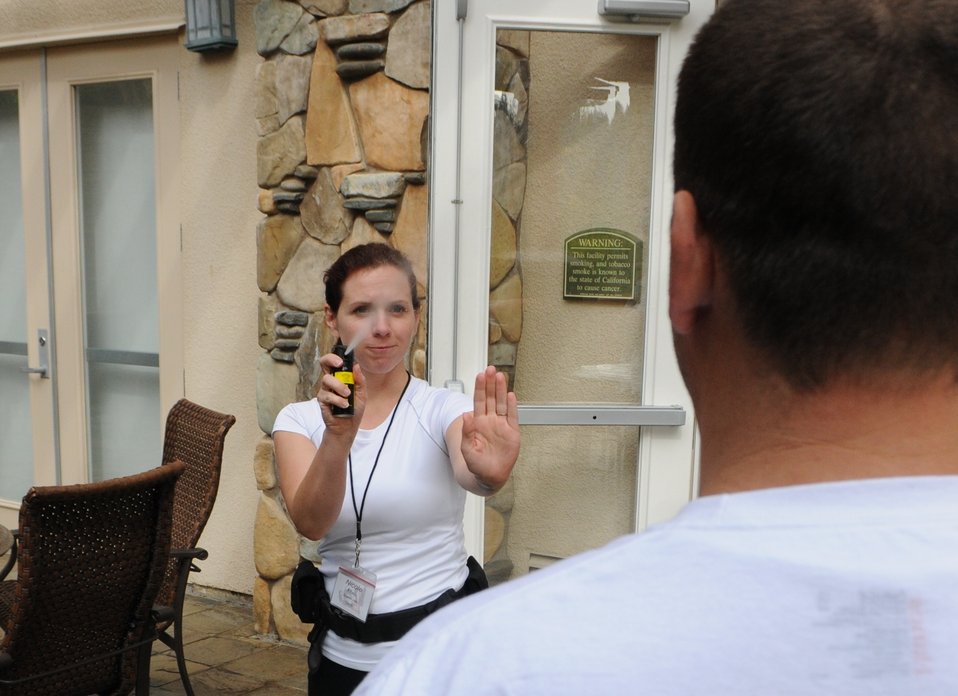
Corps park rangers train for self defense

SANTA CRUZ, Calif. (March 18, 2011) – U.S. Army Corps of Engineers Sacramento District Success Lake park ranger Nicole Arbelo uses training pepper spray on San Francisco District Lake Mendocino park ranger Wayne Shull during annual training for the Corps’ South Pacific Division park rangers here March 16.

The mandatory training serves more than 100 park rangers from Corps districts in the southwestern United States.

“The training they receive here this week helps them to assist each other in all types of situations,” said Jon Friedman, senior district ranger for the Corps’ Sacramento District and the lead pepper spray instructor for the division. “These rangers are like family to each other, and knowing how to use these tactics and tools helps them to defend themselves and their brothers and sisters on the job.” Corps park rangers must complete certification training annually to carry pepper spray for self defense.